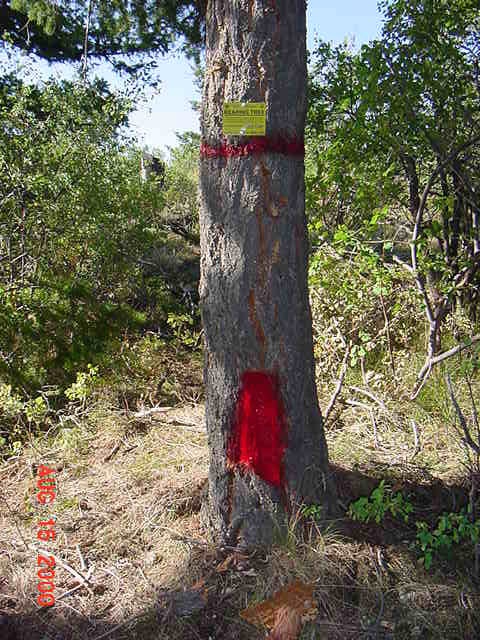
Cadastral Surveys Idaho Bureau of Land Management